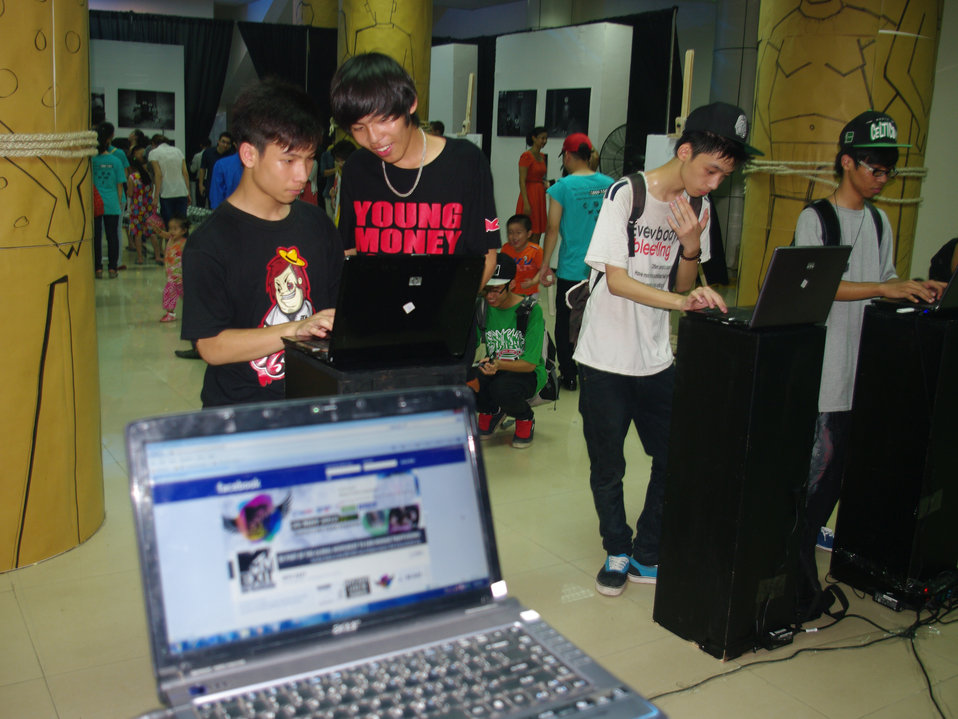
MTV EXIT opens Youth Forum in Hanoi